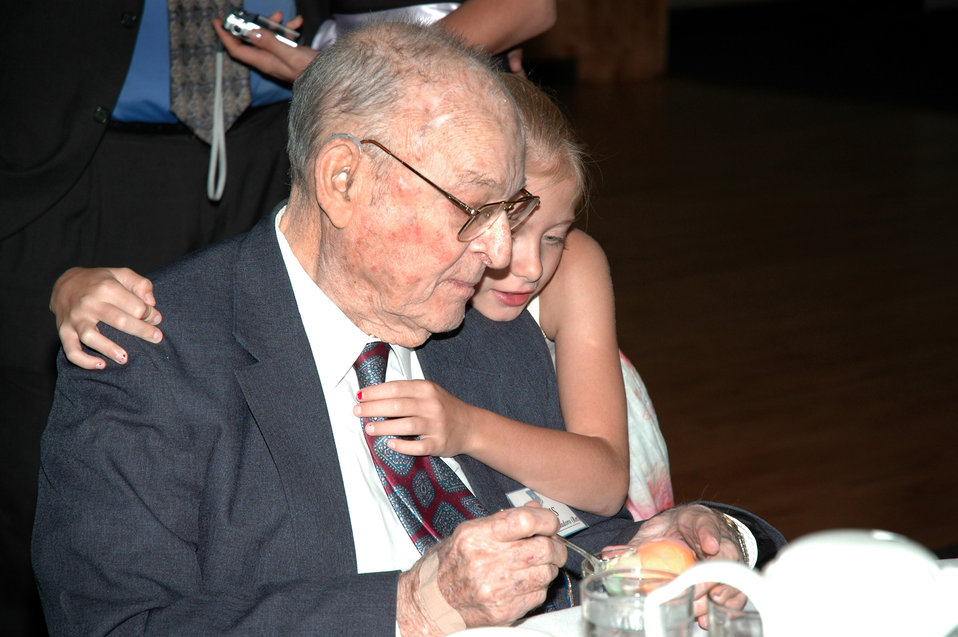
Space loses one of its stars

Retired Brig. Gen. Maurice Cristodoro gets a hug from a family member Aug.24, 2006, just before he is inducted into the Air Force Space and Missile Pioneers Hall of Fame at Peterson Air Force Base, Colo.